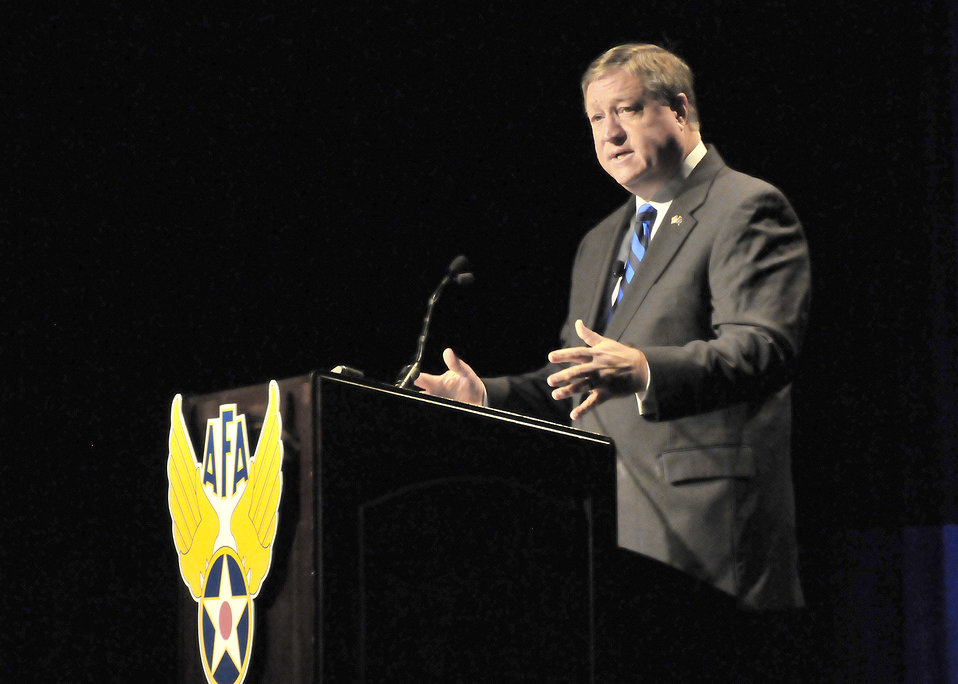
California AFA Symposium

Secretary of the Air Force Michael Donley speaks to attendees at the Air Force Association's 2010 Global Warfare Symposium Nov. 19, 2010, at the Beverly Hilton Hotel in Los Angeles.